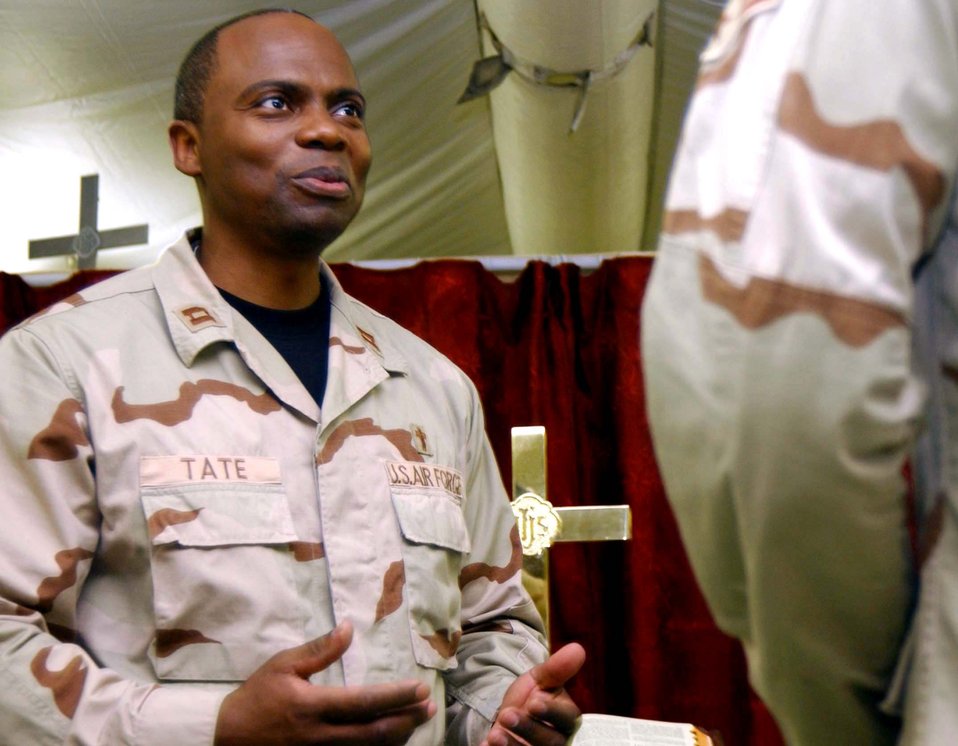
Airmen stay in spiritual shape in combat zone

Chaplain (Capt.) Jose Tate speaks to an Airman at the Air Force Theater Hospital at Balad Air Base, Iraq, on July 14. Chaplains support the hospital's patients, staff and many off-duty Airmen who volunteer there. The chaplain is assigned to the 332nd Air Expeditionary Wing.